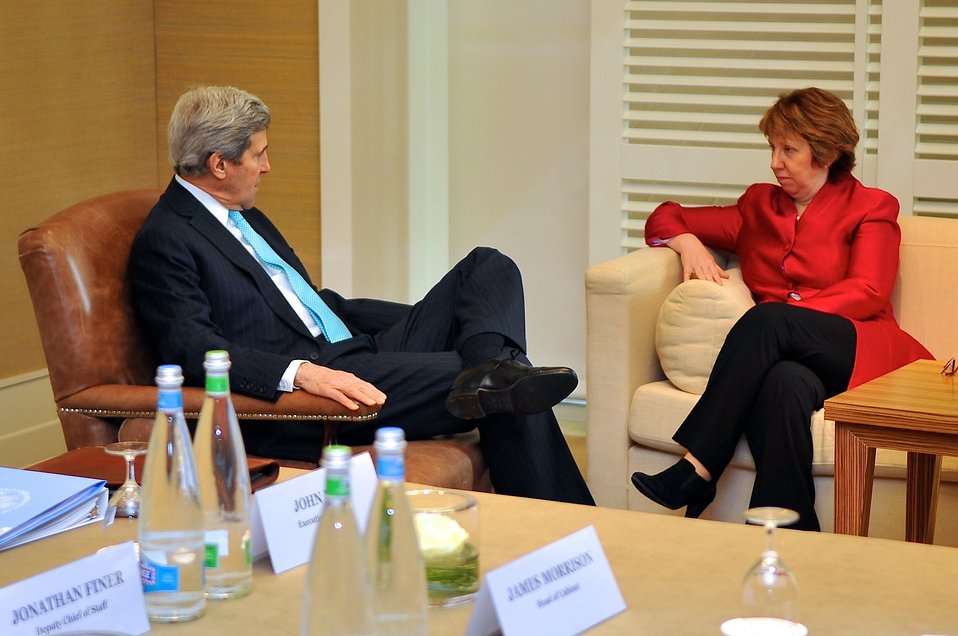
Secretary Kerry Chats With EU High Representative Ashton Before Ukraine Talks in Geneva

U.S. Secretary of State John Kerry chats with European Union High Representative Catherine Ashton before the two joined with Russian and Ukrainian officials for four-way talks about Ukraine in Geneva, Switzerland, on April 17, 2014.